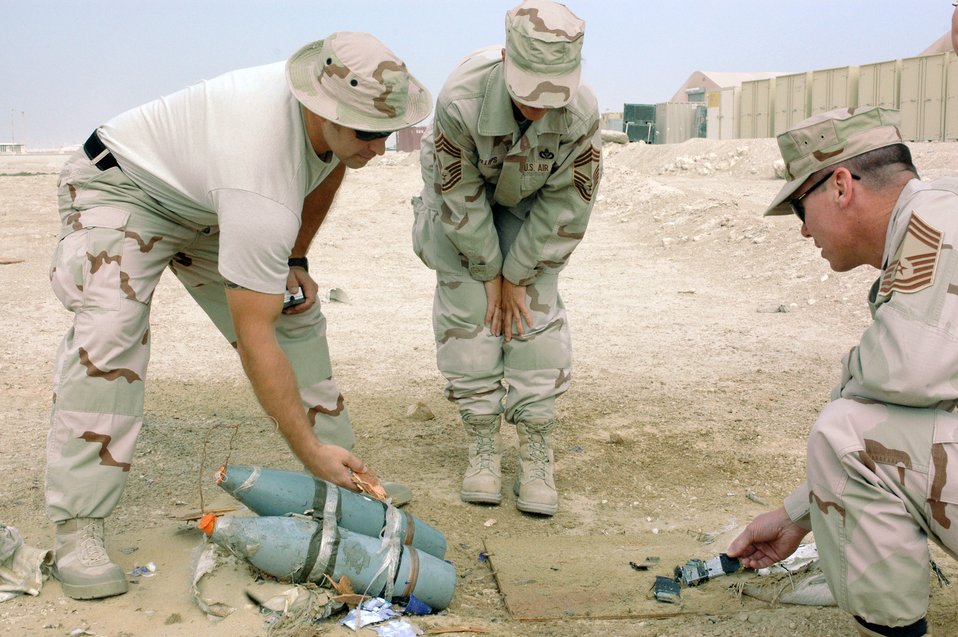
379th Explosive Ordnance Disposal keeps AOR units running

Tech. Sgt. David Fitzgerald (left), from the 379th Expeditionary Civil Engineer Squadron's explosive ordnance disposal branch, shows Chief Master Sgts. Suzanne Phillips and John O'Brien the remains of a simulated improvised explosive device. The chiefs are also with the 379th ECES.